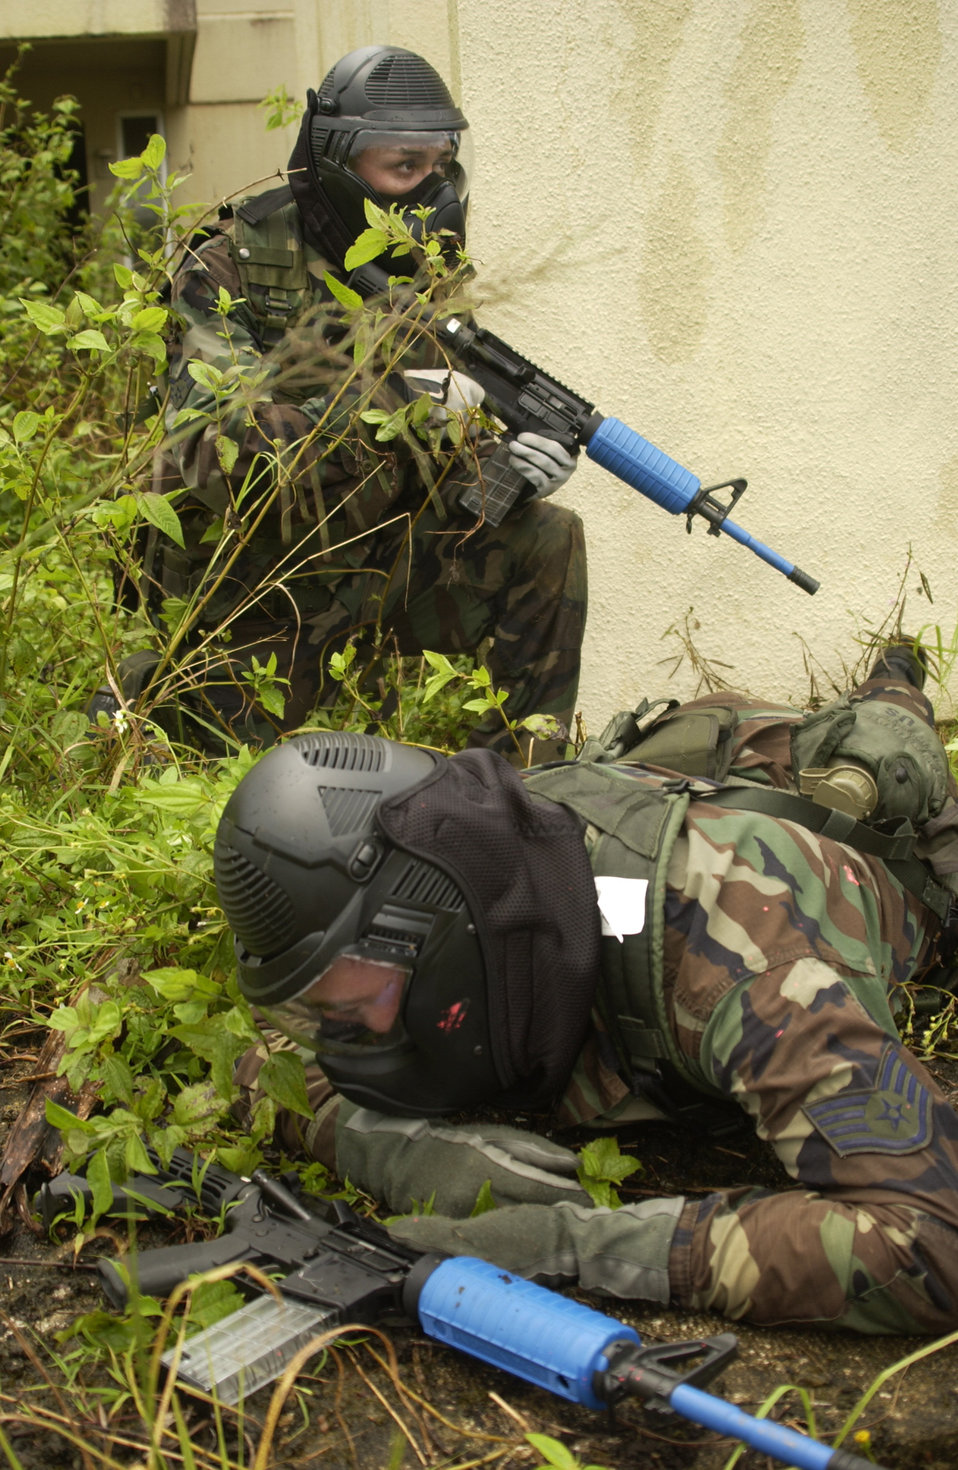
Leave no one behind

ANDERSEN AIR FORCE BASE, Guam -- Senior Airmen Jose Favela provides cover for an